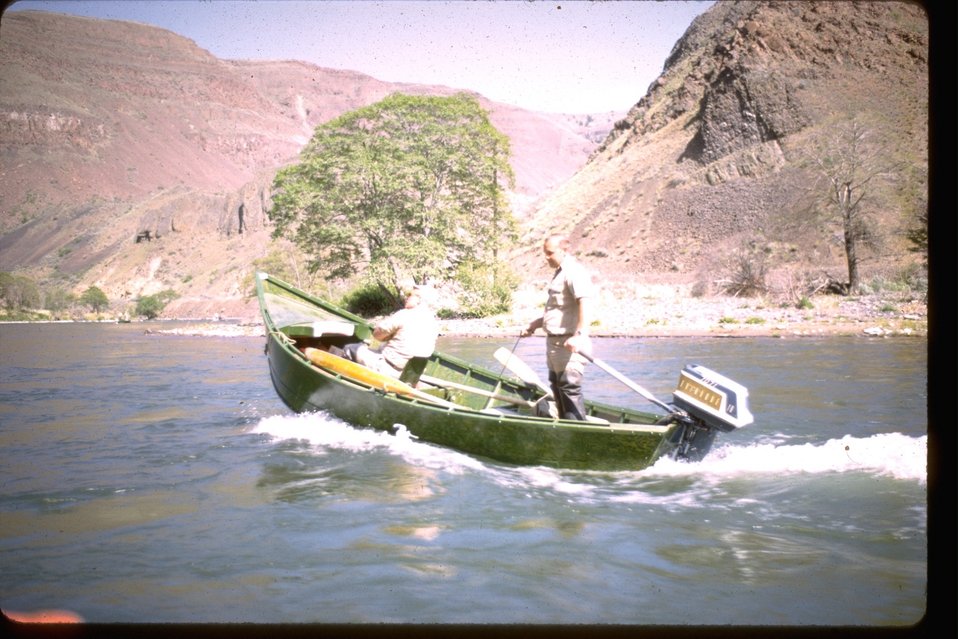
Prop boat at the North Junction of Wapinita and the Deschutes River.